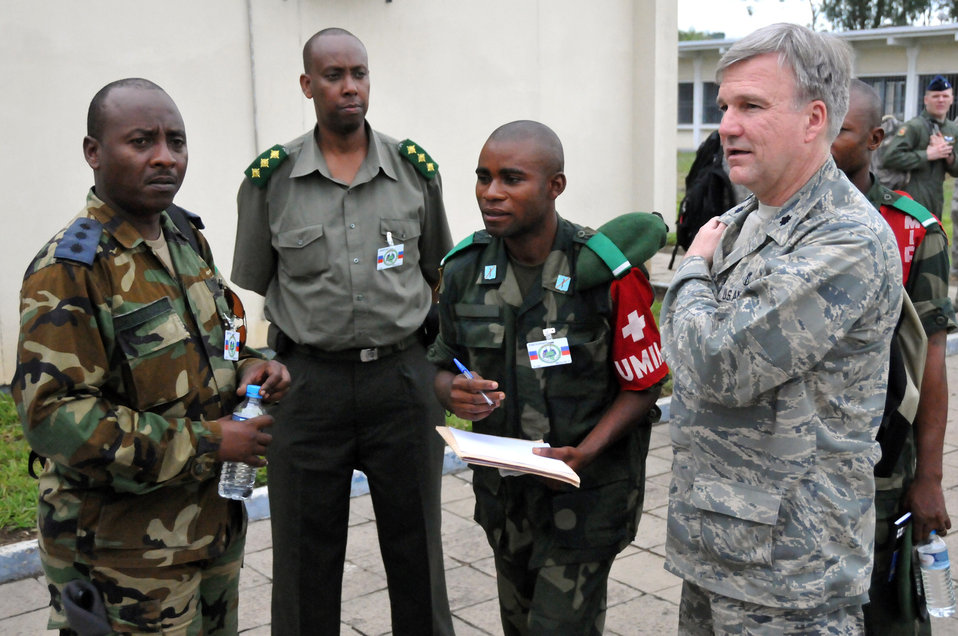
Exchanging aeromedical evacuation training across the continents

Lt. Col. Mark Desjardins (right) speaks with military members representing the Democratic Republic of the Congo and the Rwandan attendees of MEDLITE 11, April 26, 2011, at Kinshasa, Democratic Republic of the Congo. MEDLITE 11 is a joint medical exercise focused on aeromedical evacuation, to improve the readiness of U.S. Air Force and DRC personnel. Colonel Desjardins is a family practice doctor with the Rhode Island Air National Guard's 143rd Airlift Wing.